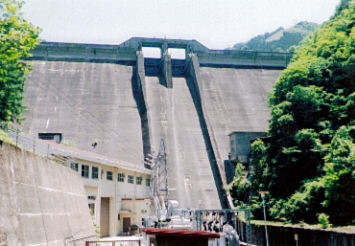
Dam